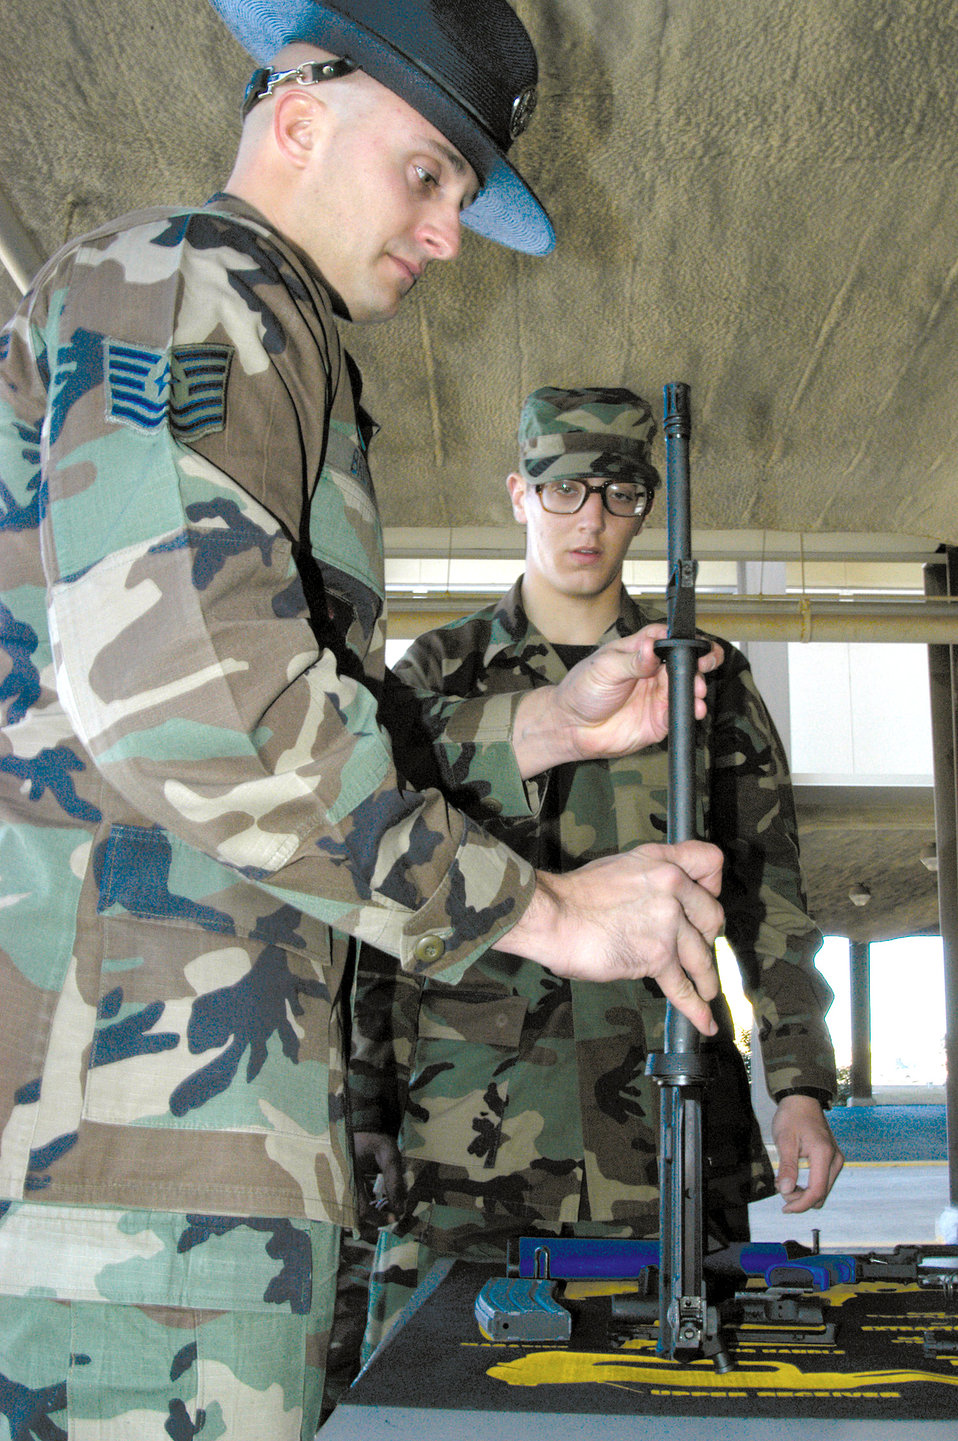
M-16 maintenance

LACKLAND AIR FORCE BASE, Texas (AFPN) -- Tech. Sgt. Tim Bruton demonstrates the proper breakdown of the M-16 training rifle to basic trainee Kyle Jacob. By November, every trainee will be issued an M-16 replica upon arrival to the base. Sergeant Bruton is a military training instructor with the 321st Training Squadron.